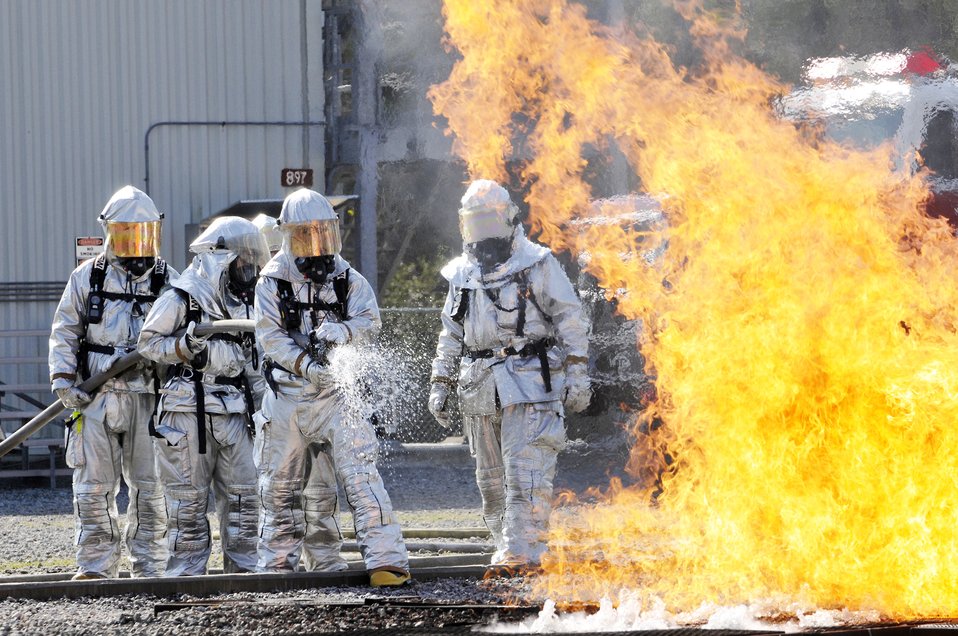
Crews train to fight fire

Firefighters from the 125th Fighter Wing at Jacksonville, Fla., and 71st Fighter Wing at Langley Air Force Base, Va, extinguish a fire in a burn pit at the Combat Readiness Training Center in Savannah, Ga., March 13, 2010. The burn pit is a live fire training simulator and re-creates most scenarios of a real aircraft fire.